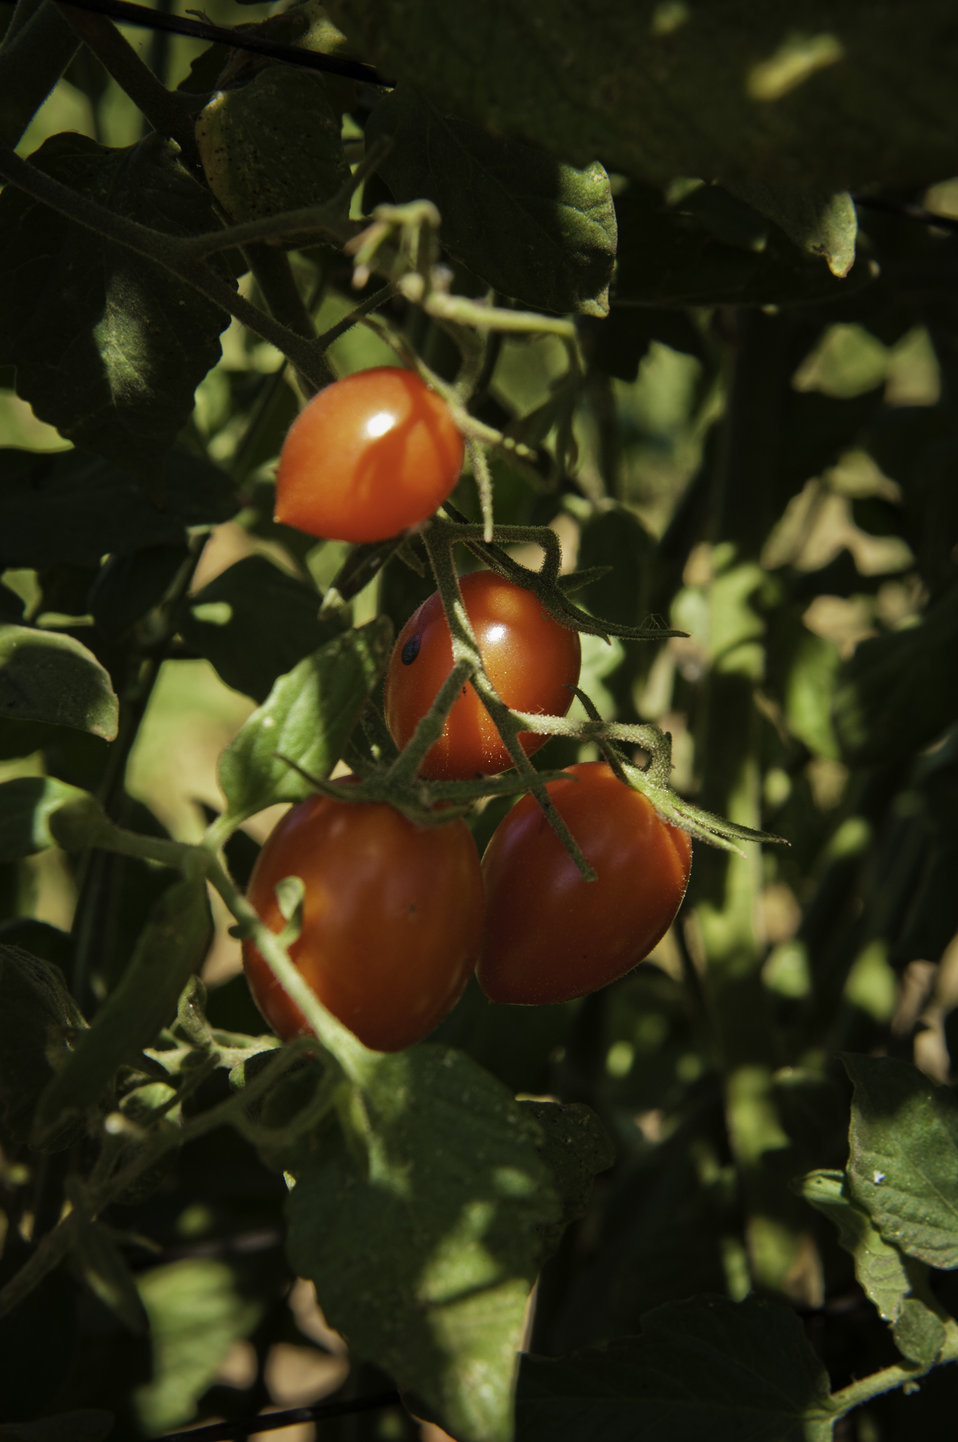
Cherry tomatoes grown on May's Flower's Farm in Sanger, California on Thursday, August 29, 2013.